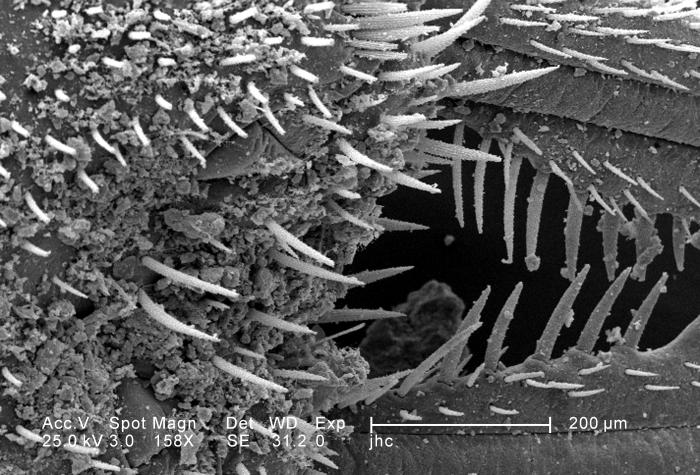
Under a relatively-low magnification of 158X, twice that of PHIL 11804, this scanning electron micrograph (SEM) revealed the ultrastructural features found on the ventral exoskeletal surface of this larval-staged antlion's mandibles. This larva is sometimes referred to as a 'doodlebug', because of the trails it leaves in the soft sand as it hunts for prey. This arthropod, i.e., jointed legs, undergoes dramatic morphologic changes when it metamorphoses into a beautiful flying antlion lacewing.